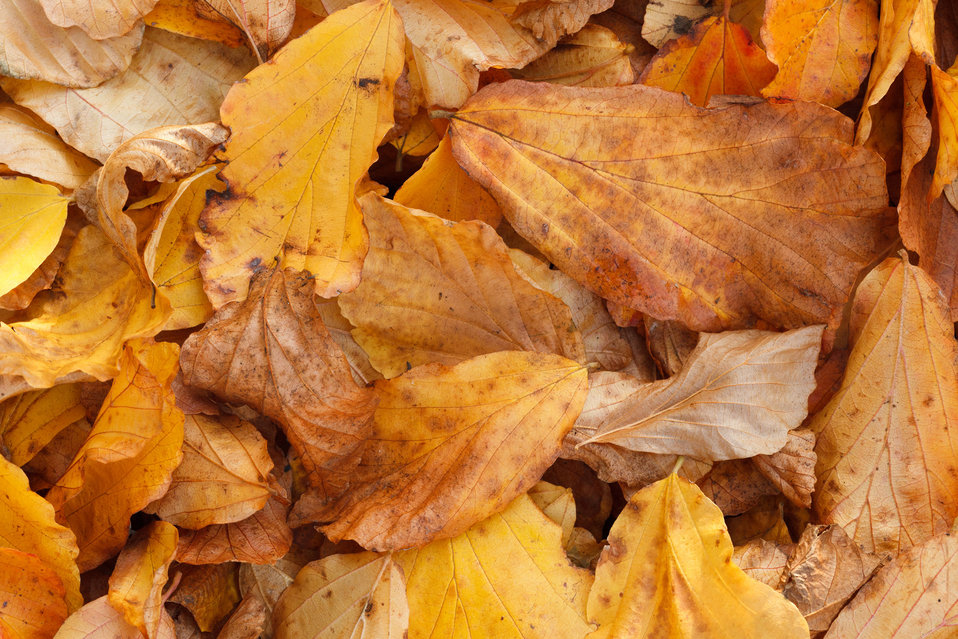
Yellow leaves background

Yellow autumn leaves background.